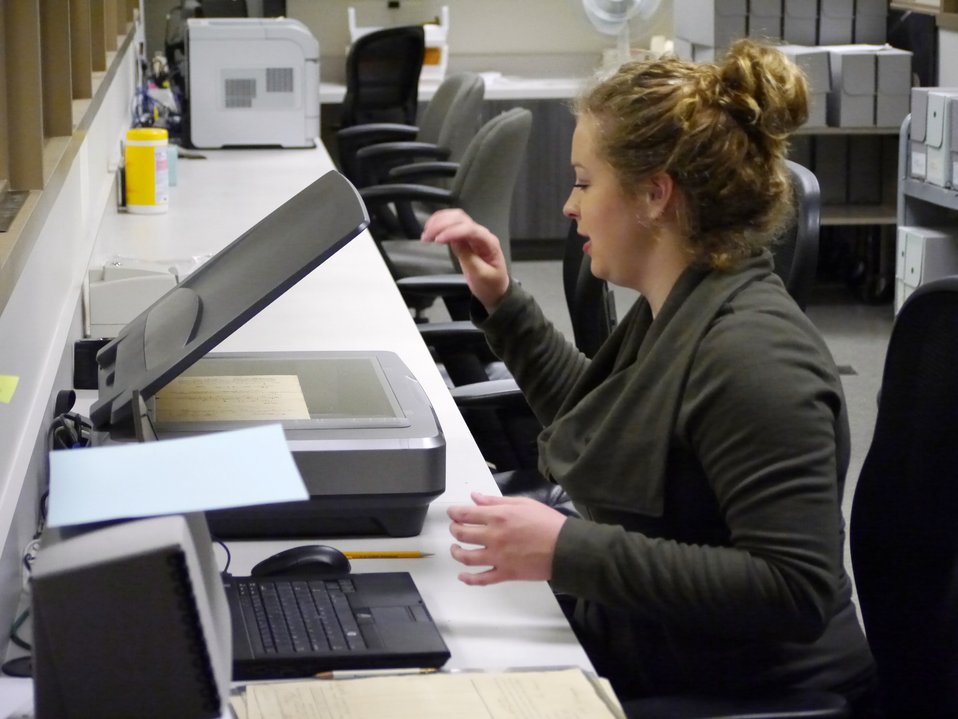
Student Intern Scanning Project - Student Intern Bianca Mariottini; Location: John Burgess Facility, National Archives at Fort Worth, Fort Worth, TX